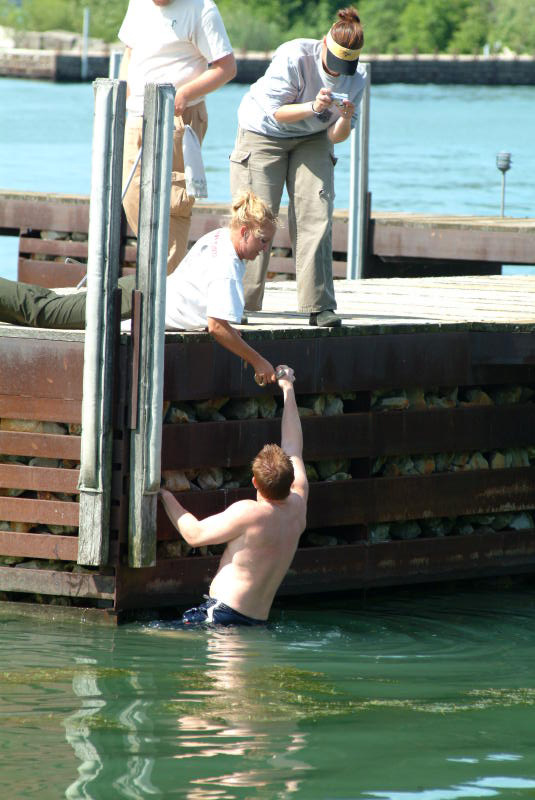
Recovered Lake Erie watersnake (Nerodia sipedon insularum)